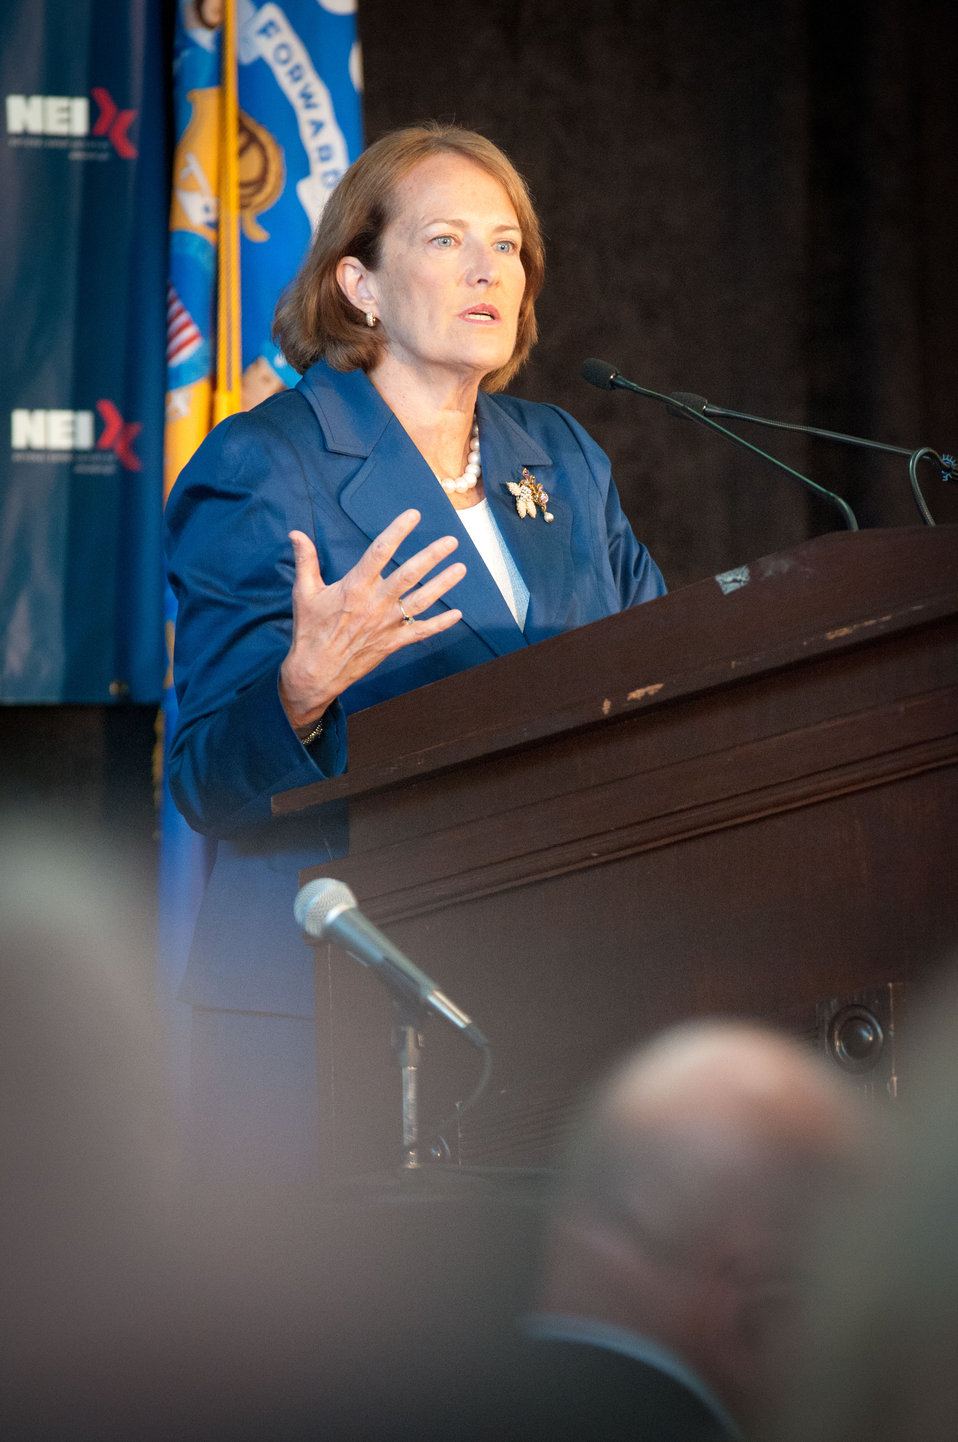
Karen Mills, Administrator of the Small Business Administration speaks at the National Export Initiative (NEI) Small Business Tour in Milwaukee, WI, on Wednesday, August 3, 2011. An important goal of the NEI is to provide additional assistance to small and medium-sized businesses, which are major drivers of job creation. The NEI is assisting small and medium-sized businesses win more foreign government contracts, find buyers worldwide, participate in more trade missions and trade shows, receive more export financing, and learn new ways to sell products and services overseas.